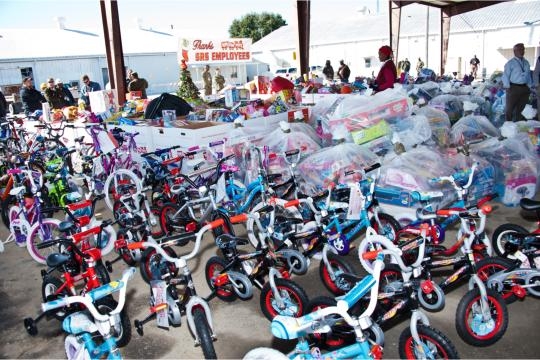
Charitable Giving by EM Employees and Contractors Tops $800,000

EM employees who participated in the latest Combined Federal Campaign season that ended this month and their contractor counterparts donated more than $800,000 and other gifts to people in need.
The campaign is a workplace charitable giving drive for employees in the federal workplace.

In Aiken, S.C., Savannah River Site (SRS) donations to the campaign totaled more than $143,800. Employees also collected more than 13,000 items for the Marine Toys for Tots Foundation. Since the start of the SRS Toys for Tots campaigns in 1991, employees have collected more than 215,000 toys for the effort. The 2011 campaign marked the largest toy contribution to date at SRS, an effort requiring several large trucks and numerous volunteers.